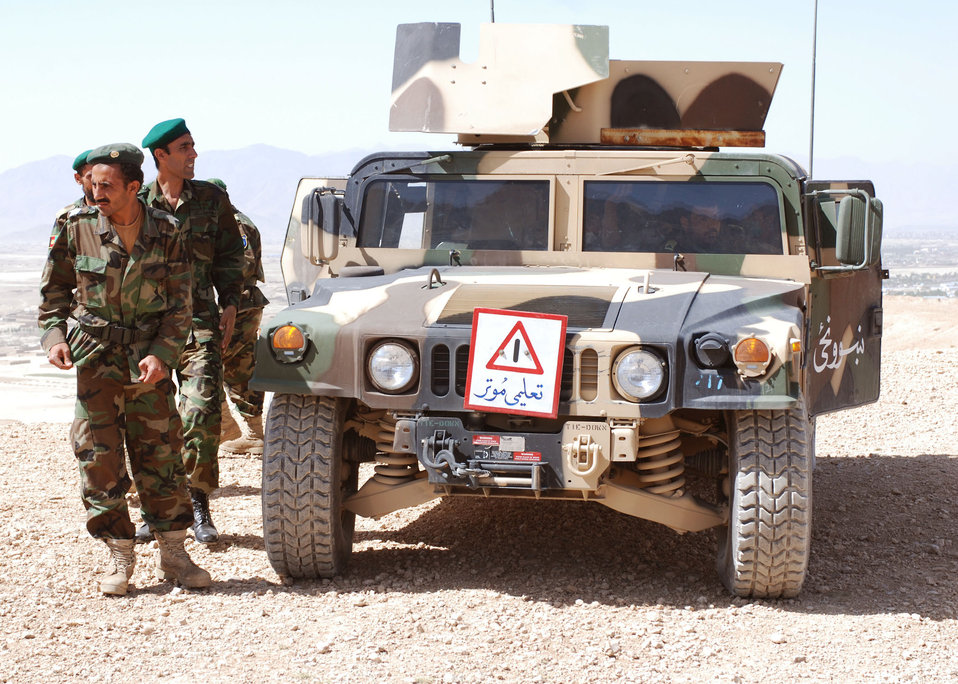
ANA soldiers master driving new Humvees

Soldiers from the Afghan National Army train in Humvees at the Kabul Military Training Center in Kabul, Afghanistan. The five-month course is led by Capt. Todd Klusek and Army Capt. William Snyder and teaches ANA soldiers how to properly maintain and operate Humvees. To date, 75 ANA soldiers have graduated the course with some returning as course instructors.